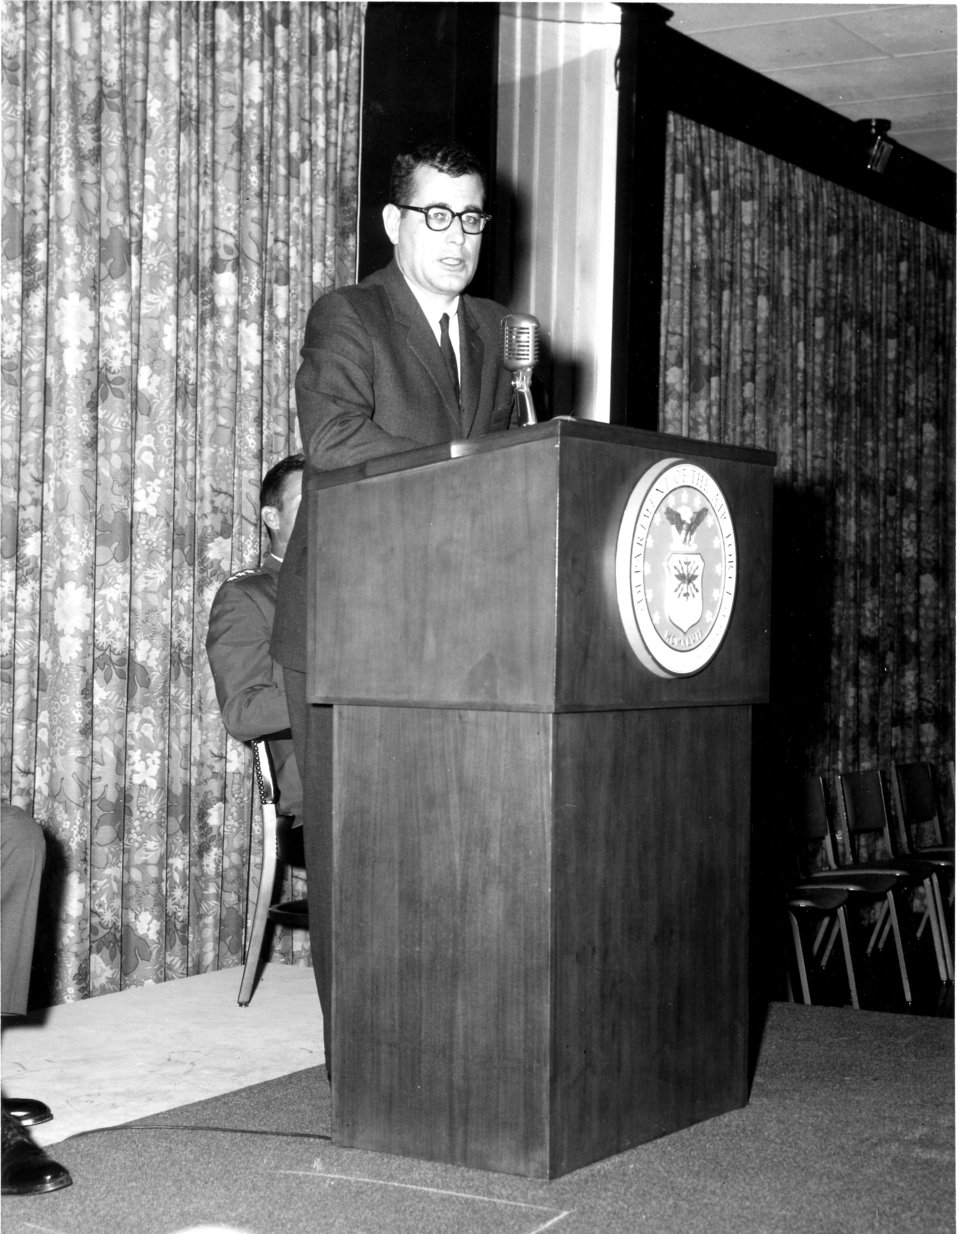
Dr. Harold Brown

1960's -- Air Force Secretary Dr. Harold Brown addresses the participants at the Second Annual USAF Cost Reduction Program Award ceremonies at Offutt AFB, Neb., Oct. 27, 1965. Secretary Brown extended his congratulations to those receiving awards, and expressed his appreciation to the military and civilian personnel who contributed to the savings realized in fiscal year 1965.